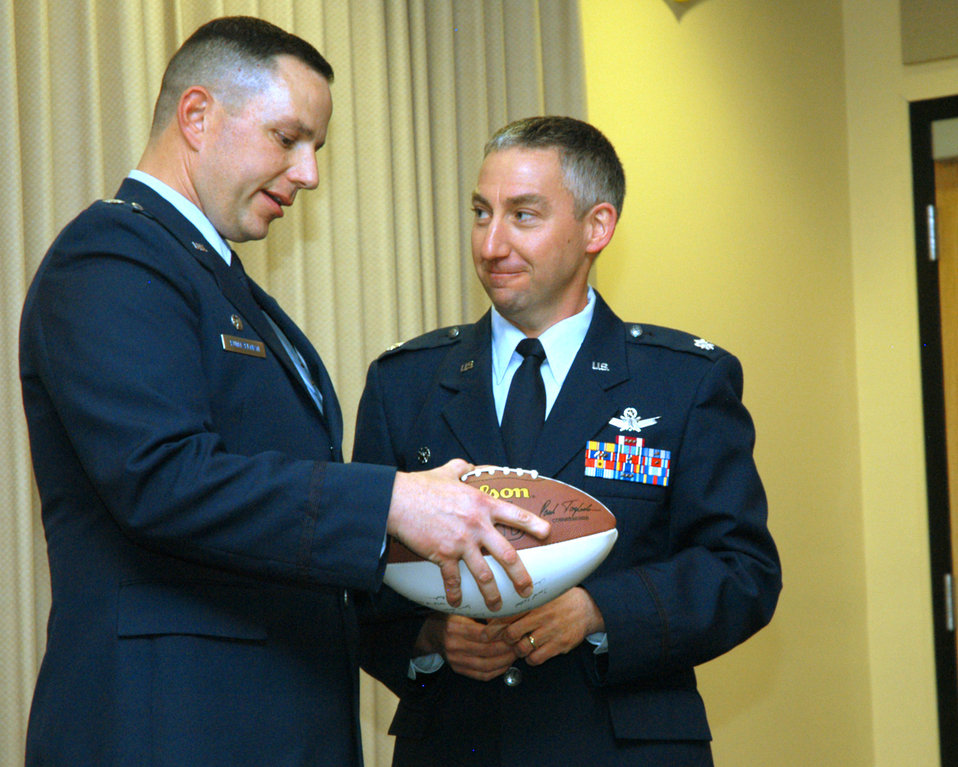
Space pros remember SVN-15's history

Lt. Cols. Kurt Kuntzelman and Craig Bomberg discuss the 16-year history of GPS Satellite Vehicle Number 15 during the GPS SVN-15 farewell at Schriever Air Force Base, Colo., March 14. Colonel Kuntzelman threw a 15-yard pass to Colonel Bomberg to symbolize the SVN-15 handover from 2nd SOPS to 1st SOPS. Colonel Kuntzelman is the 2nd SOPS commander; Colonel Bomberg is the 1st SOPS commander.